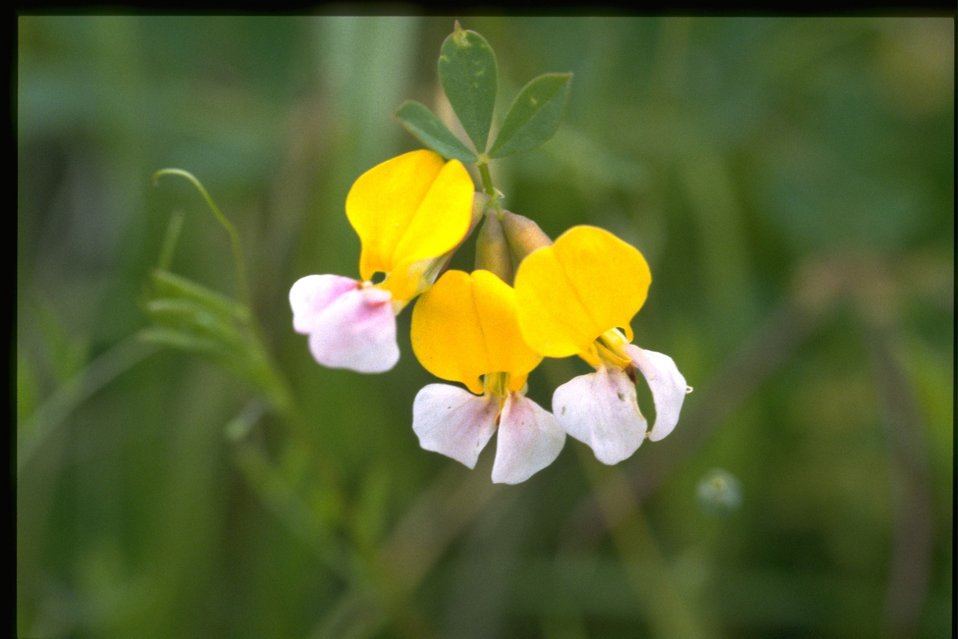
Closeup shot of Lotus pinnatus.